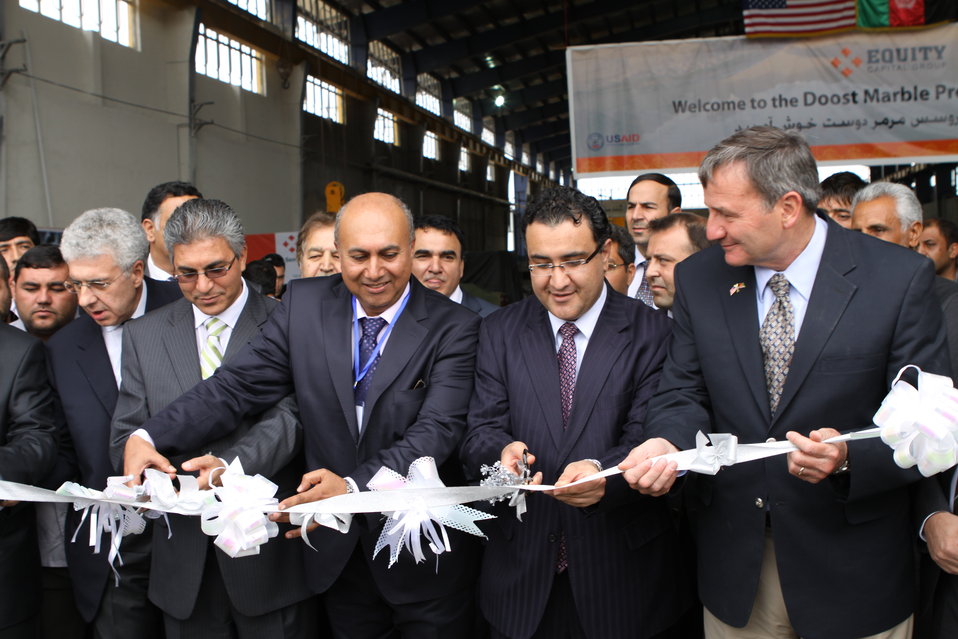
100525 Hirat Marble Conference 066